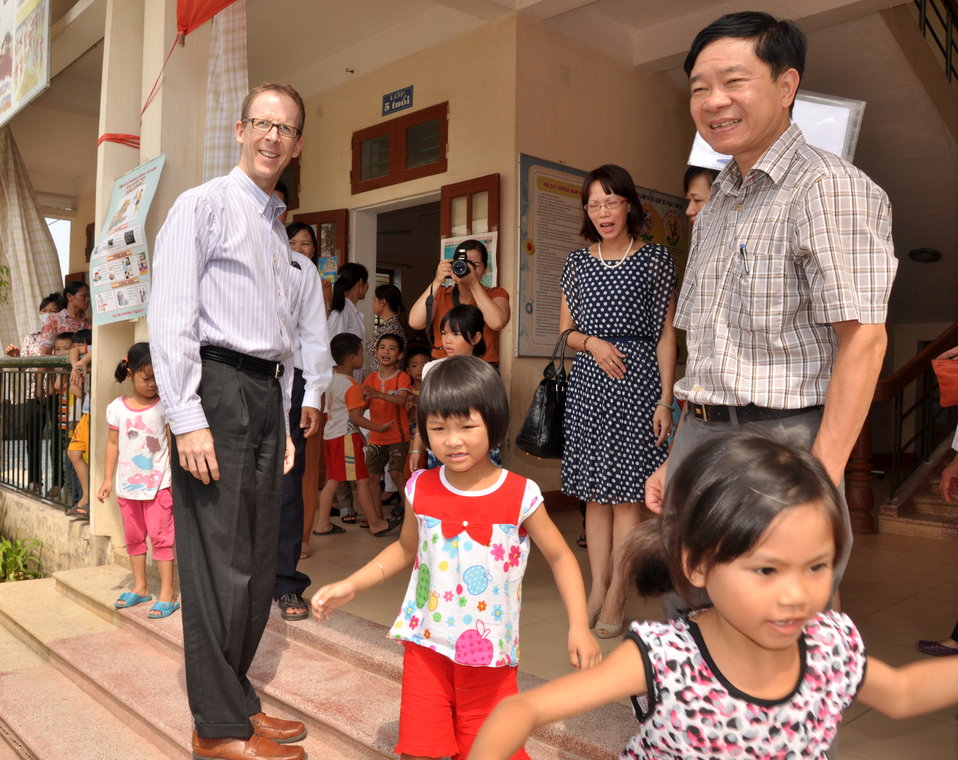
USAID Delivers Deworming Medication to Kindergartners in Nam Dinh Province

Children of Vietnam's Nam Dinh Province receive deworming medicine in a program supported by USAID and World Vision Australia.
June 1, 2013